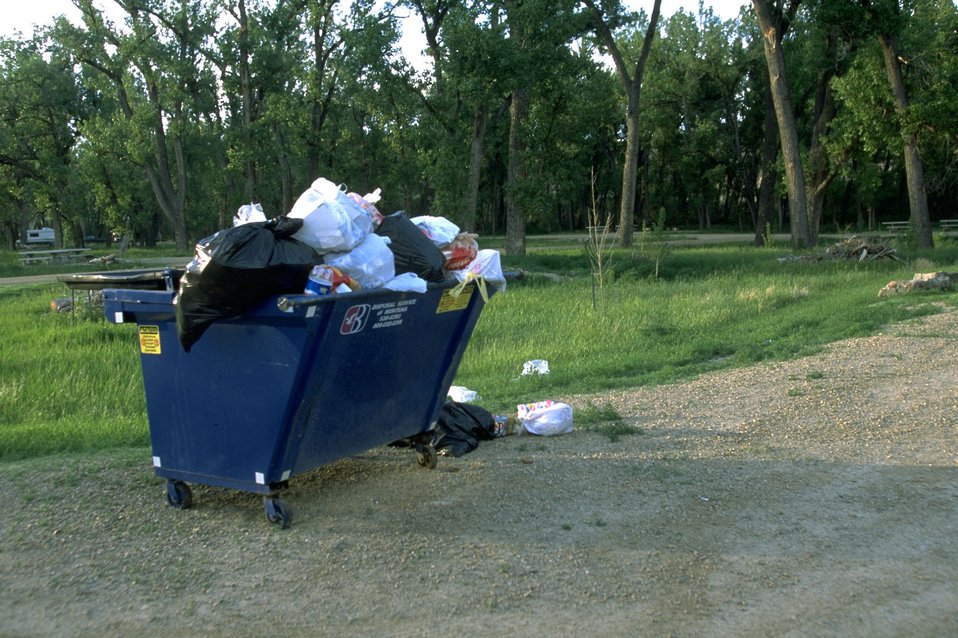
A very full trash dumpster at Kipp Recreation Site